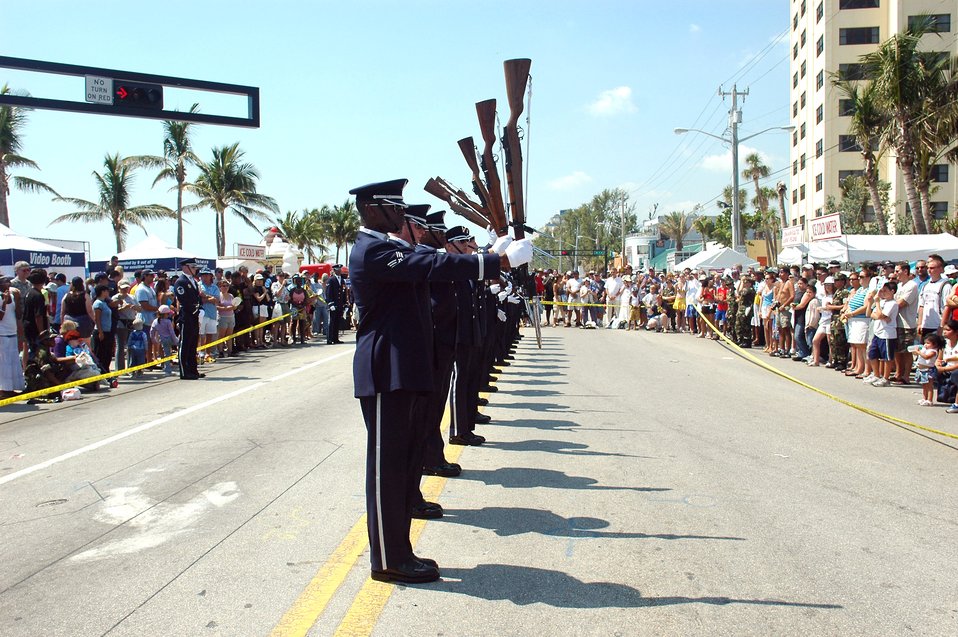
Air Force Honor Guard performs at 2006 Air and Sea Show

U.S. Air Force Honor Guard Drill Team members perform for the crowd during the 2006 Air and Sea Show in Fort Lauderdale, Fla., May 4 to 7.